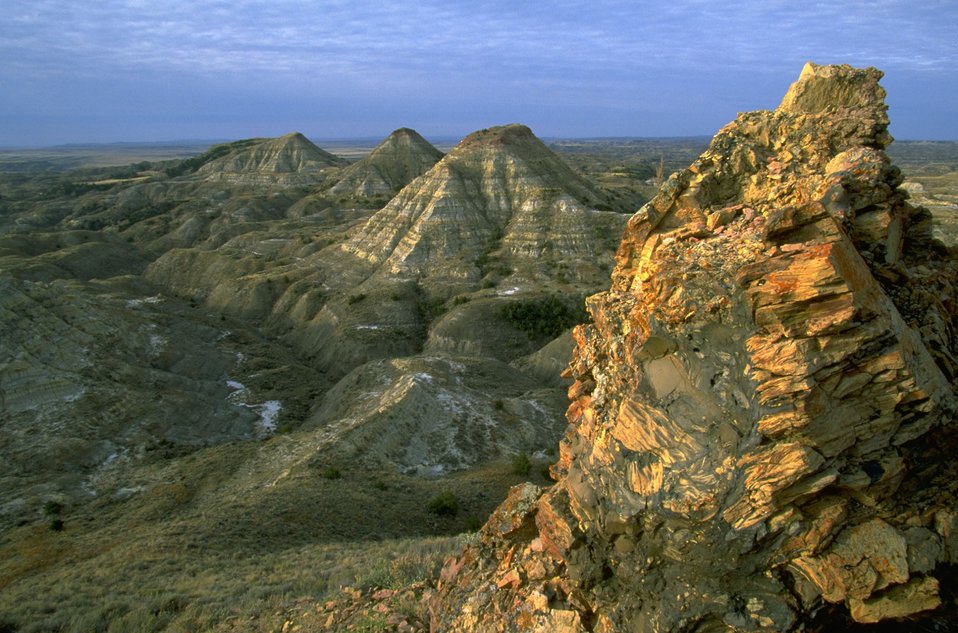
The ""Pillar"" in the Terry Badlands